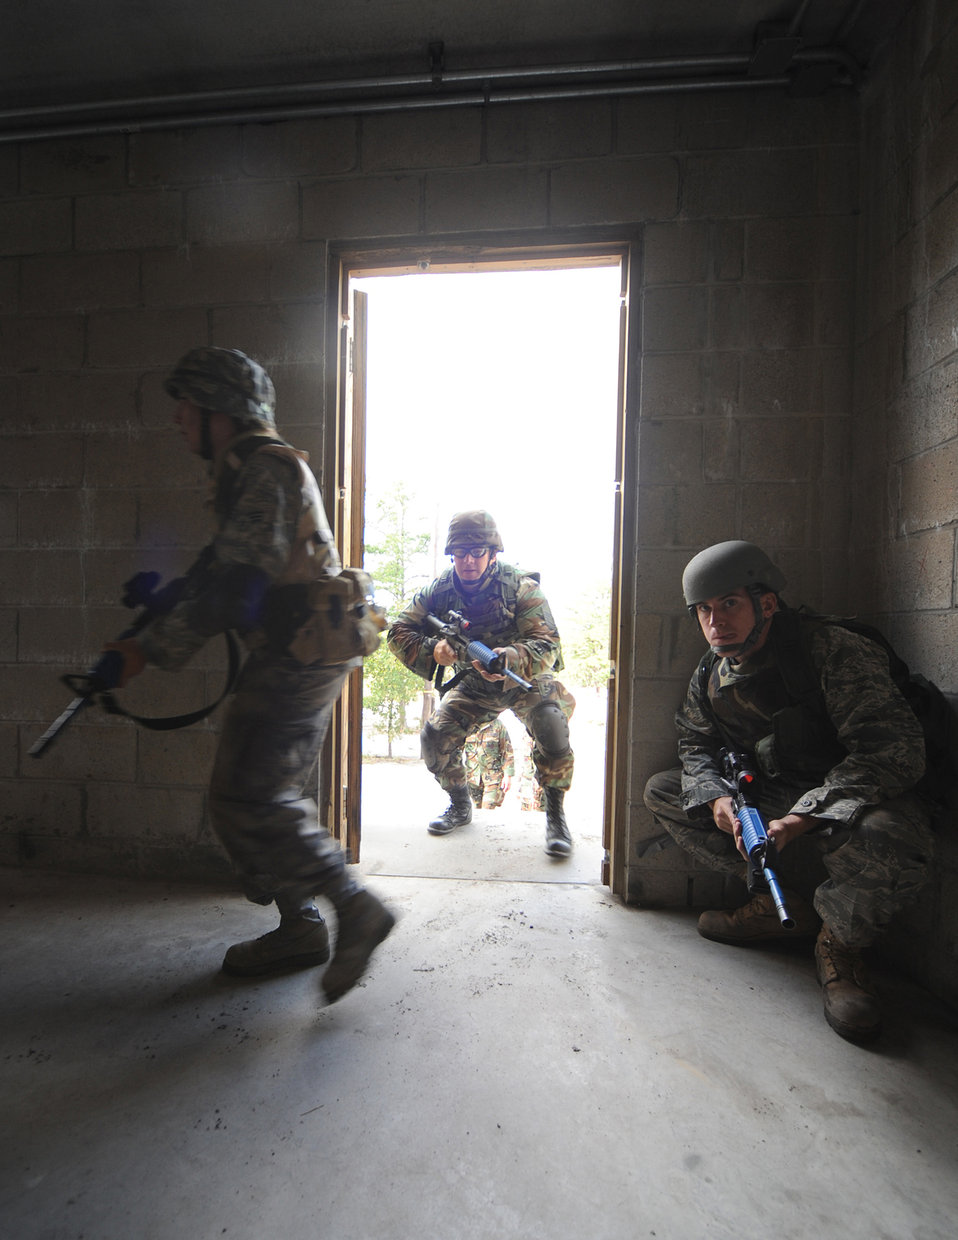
Learning the rules of engagement

Students partcipate in contingency skills basic training during Oct. 1 at Fort Dix, N.J. Air Force legal career field members learned rules of use of force, engagement and expeditionary basics for deployments. The training is held for three days prior to them attending the Advanced Contingency Skills Training Course taught by the Air Force Expeditionary Center's 421st Combat Training Squadron on Fort Dix.